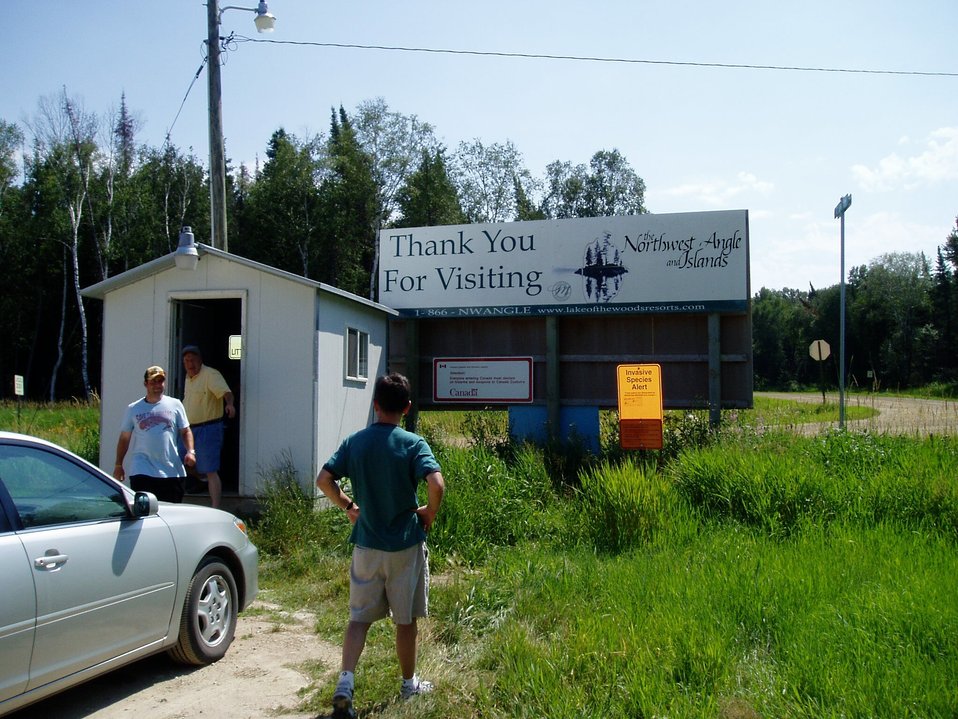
Reporting booth at Jim's Corner, Northwest Angle